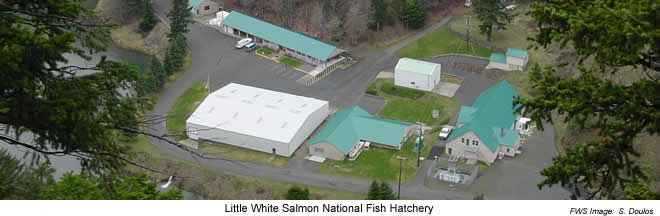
Little White Salmon National Fish Hatchery

An aerial view of the Little White Salmon National Fish Hatchery in Stevenson, Washington, along the Columbia River just east of Bonneville Dam. This NFH boasts an underwater fish viewing area, which is open year-round.